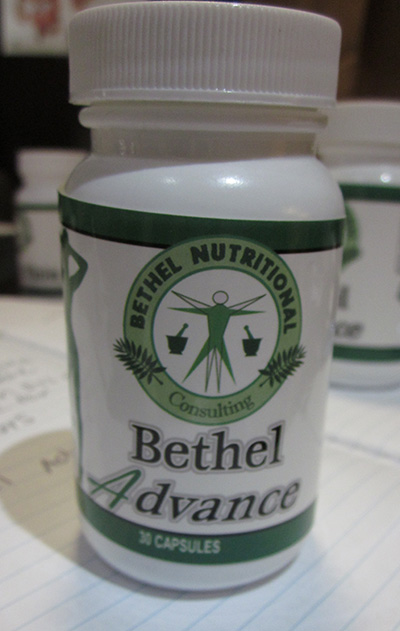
RECALLED - Weight Loss Pills

August 5, 2013 – Product Recall – Bethel Nutritional Consulting, Inc. Expands Voluntary Recall to Include Bethel Advance and Quick Thin Products Found to Contain an Undeclared Drug Ingredient.